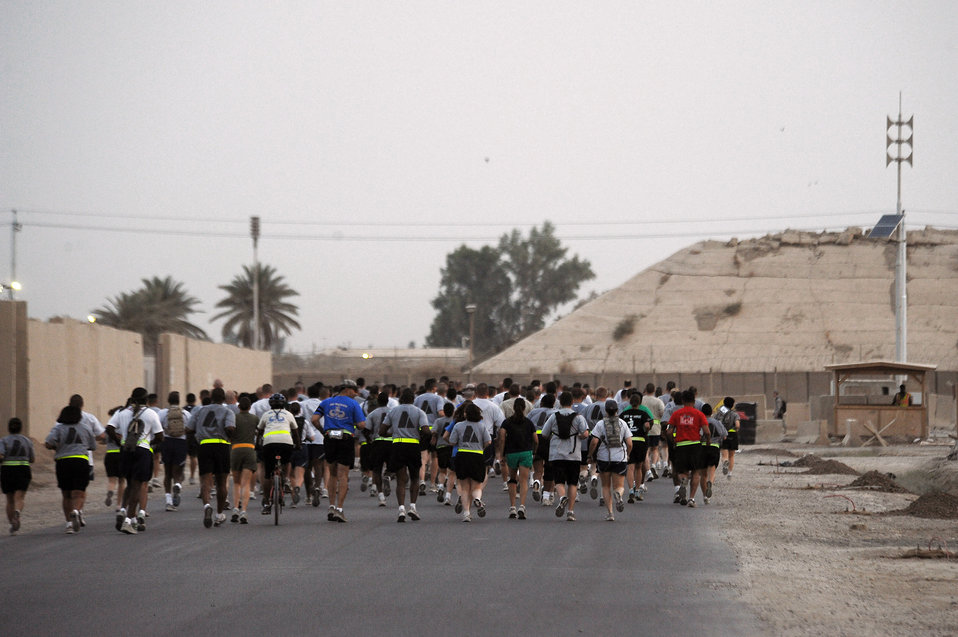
Servicemembers take part in Baghdad Boilermaker

More than 240 deployed servicemembers from around the Victory Base complex participate in the Baghdad Boilermaker 15-kilometer race June 13 at Sather Air Base, Iraq. The race was organized by Master Sgts. James Carrabba and Jeffrey Conant who have both participated in the Utica, N.Y., Boilermaker for years.